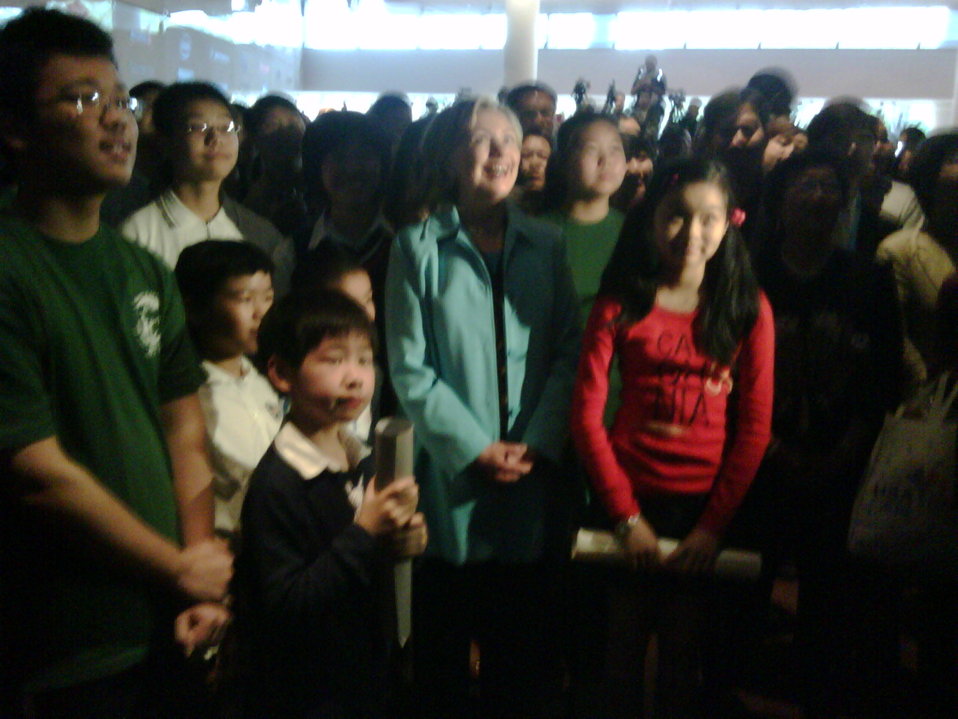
U.S. Secretary of State Hillary Rodham Clinton Visits Shanghai Expo

U.S. Secretary of State Hillary Rodham Clinton visits the World Expo in Shanghai, China, May 22, 2010.